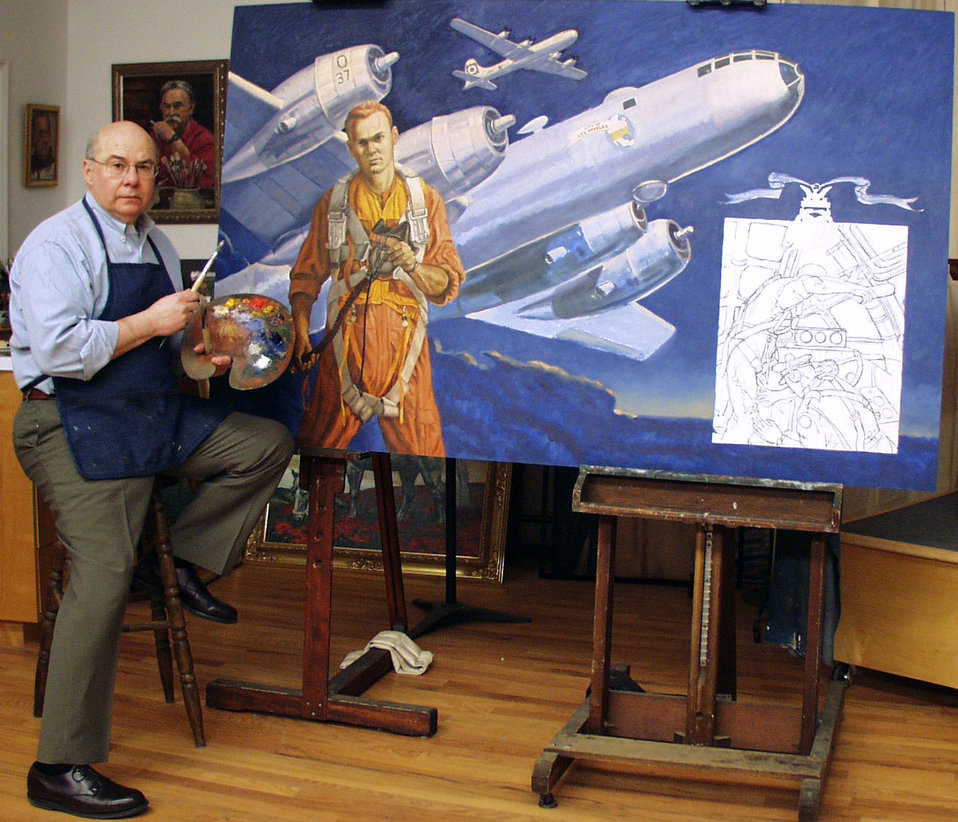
Artists document Air Force history with art

WASHINGTON -- Artist John Witt works on a painting featuring Staff Sgt. Henry